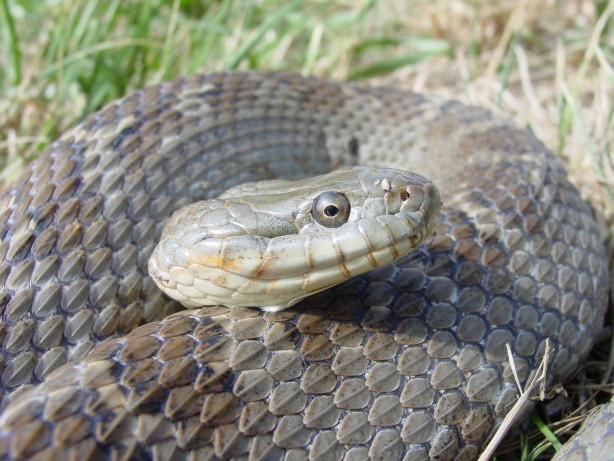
Recovered Lake Erie watersnake (Nerodia sipedon insularum)